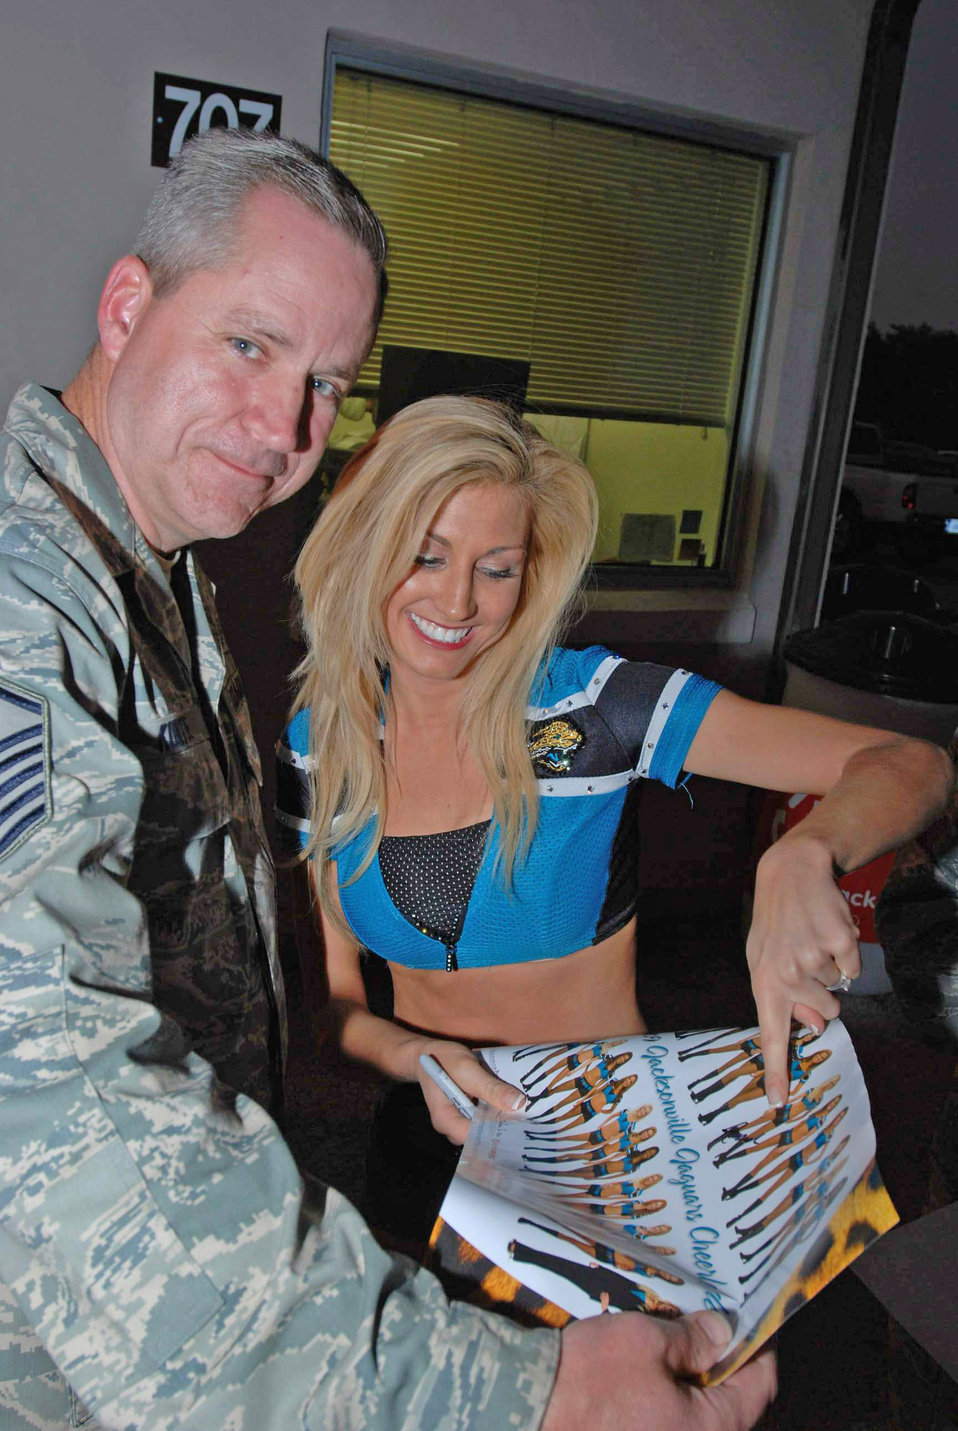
NFL Pro Bowl cheerleaders boost morale for Operation Unified Response workers

A Jacksonville Jaguar cheerleader shows Master Sgt. Mike Kuntze where she signed his poster Jan. 27, 2010, at Homestead Air Reserve Base, Fla. Sergeant Kuntze, an aerial porter with the 27th Aerial Port Squadron from Minneapolis-St. Paul ARB, Minn., deployed to Homestead ARB to support Operation Unified Response.